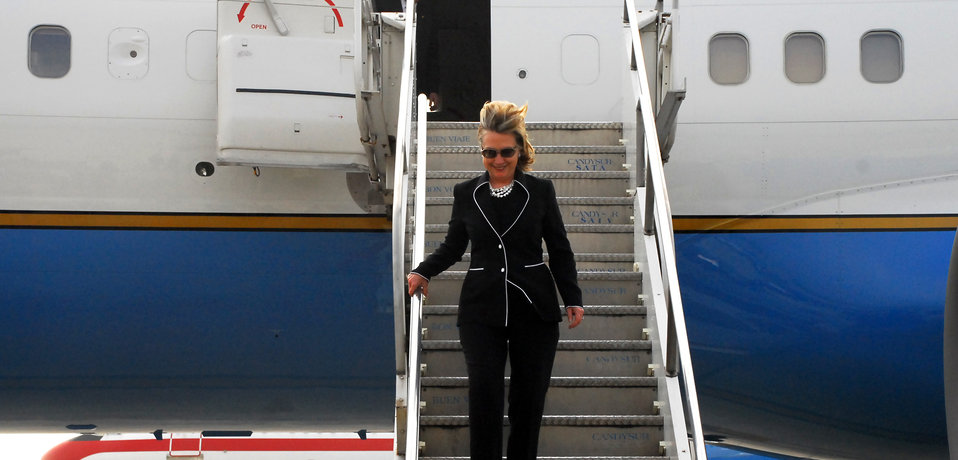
Secretary Clinton Arrives in Montevideo, Uruguay

U.S. Secretary of State Hillary Rodham Clinton arrives in Montevideo, Uruguay March 1, 2010.